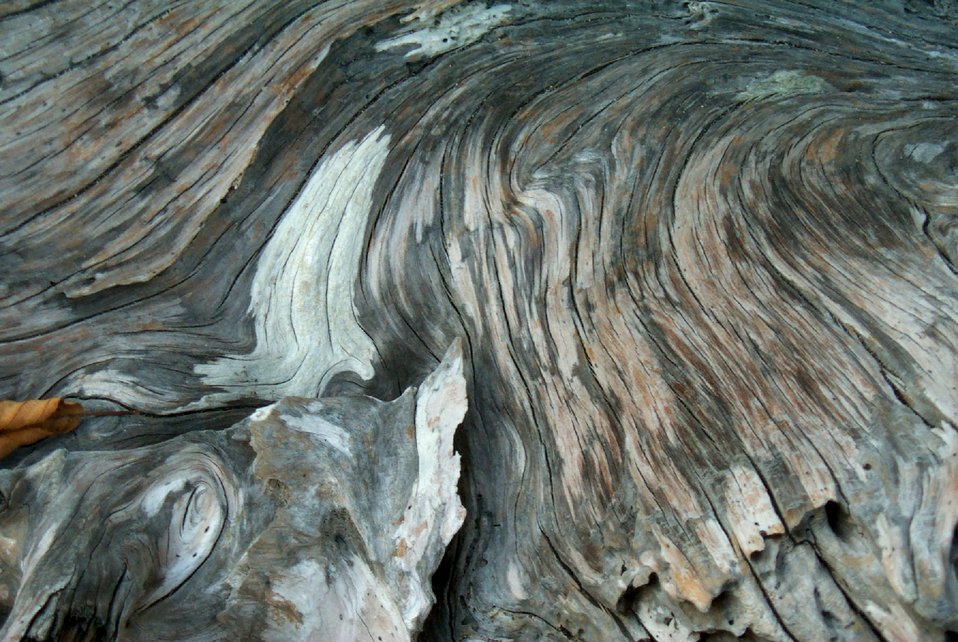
Driftwood at Gig Harbor.